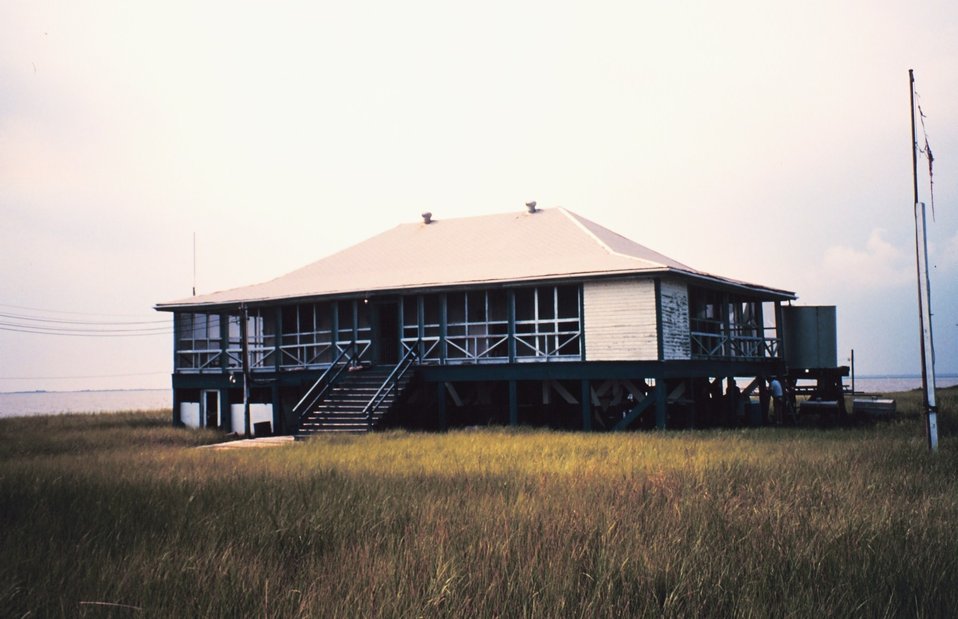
Hunting and fishing camp built on stilts - accessible only by boat although power lines have been run across the marsh.